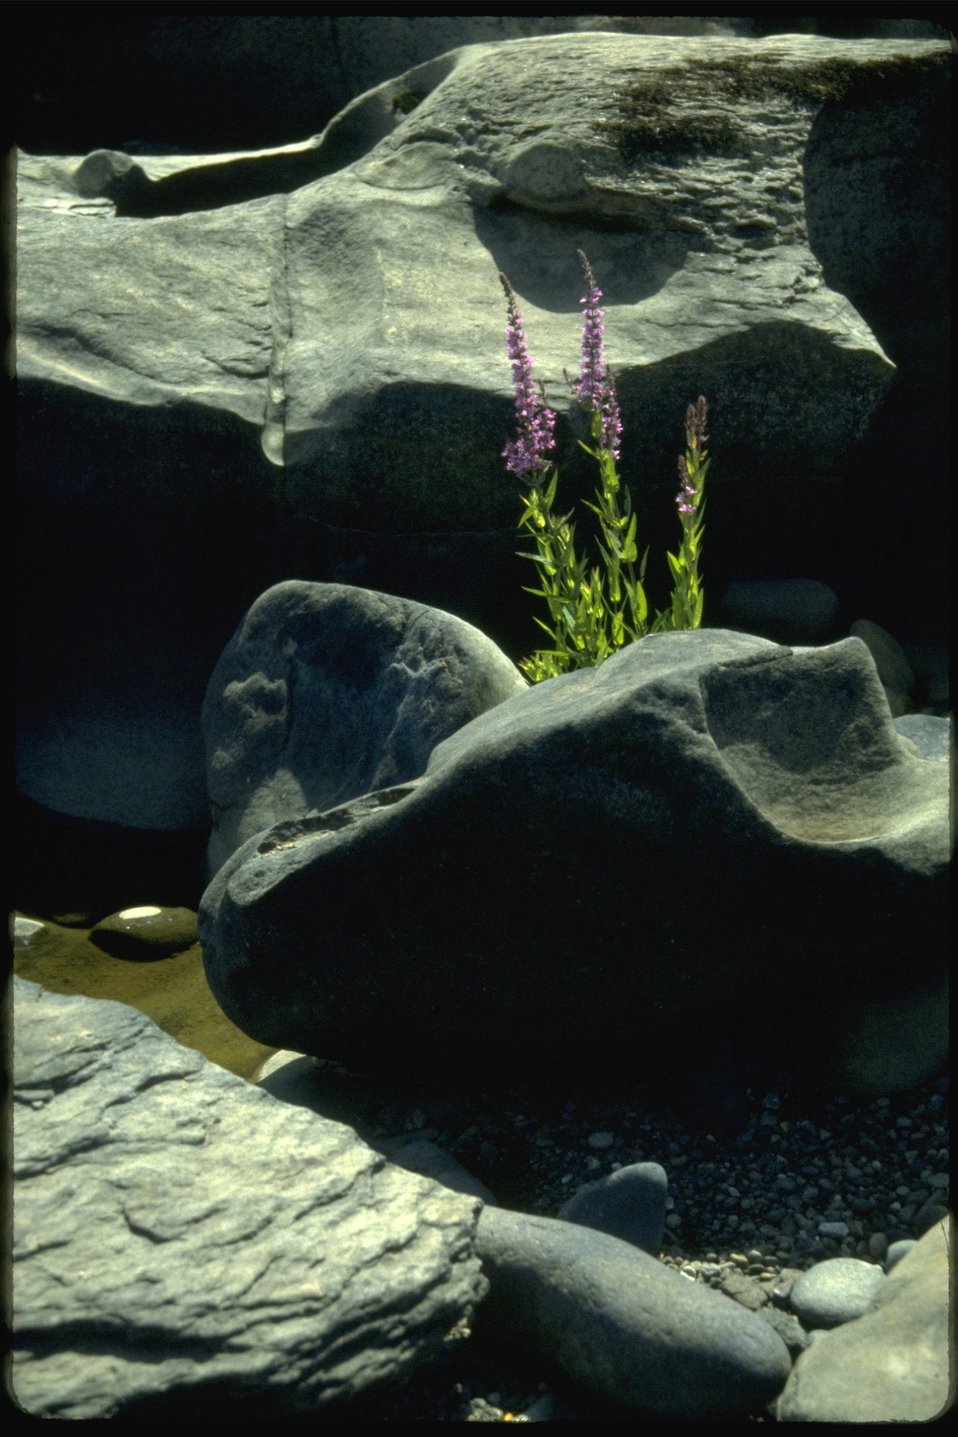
Wildflower in bed of rocks.